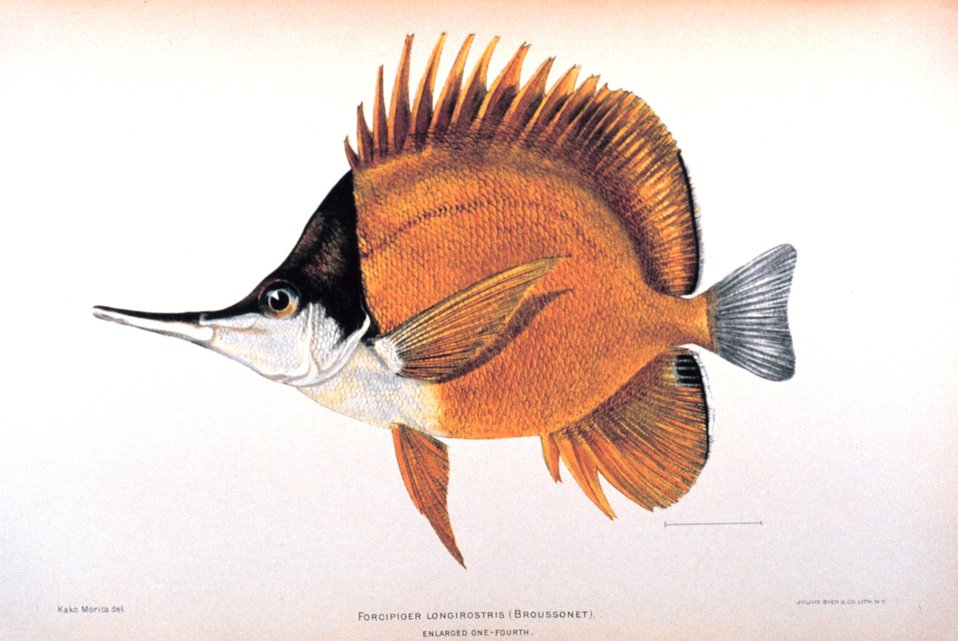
Forcipiger longirostris (Broussonet). In: 'The Shore Fishes of the Hawaiian Islands, with a General Account of the Fish Fauna', by David Starr Jordan and Barton Warren Evermann. Bulletin of the United States Fish Commission, Vol. XXIII, for 1903. Part I. P. 574, Plate XLVI.